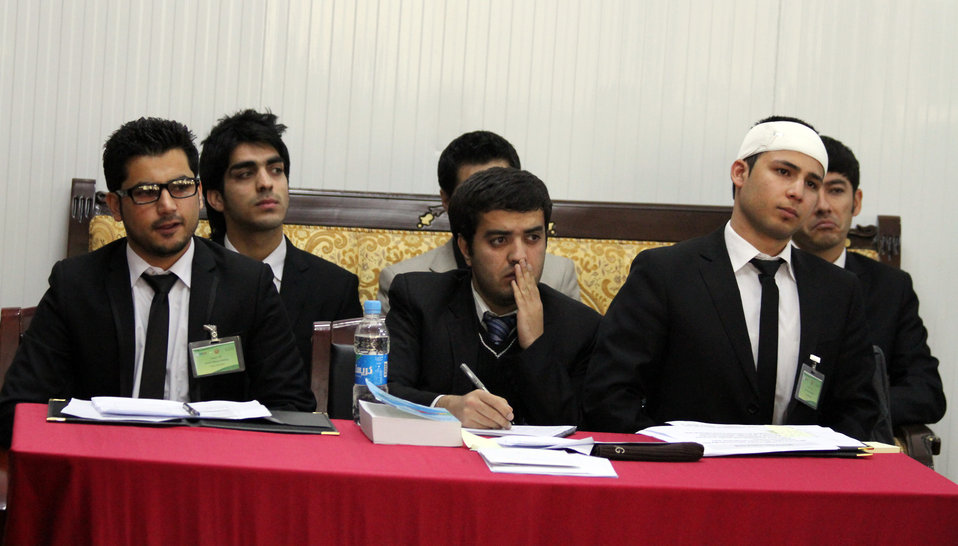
Afghanistan Final National Round of the 2013 Philip C.Jessup International Law Moot Court Competition